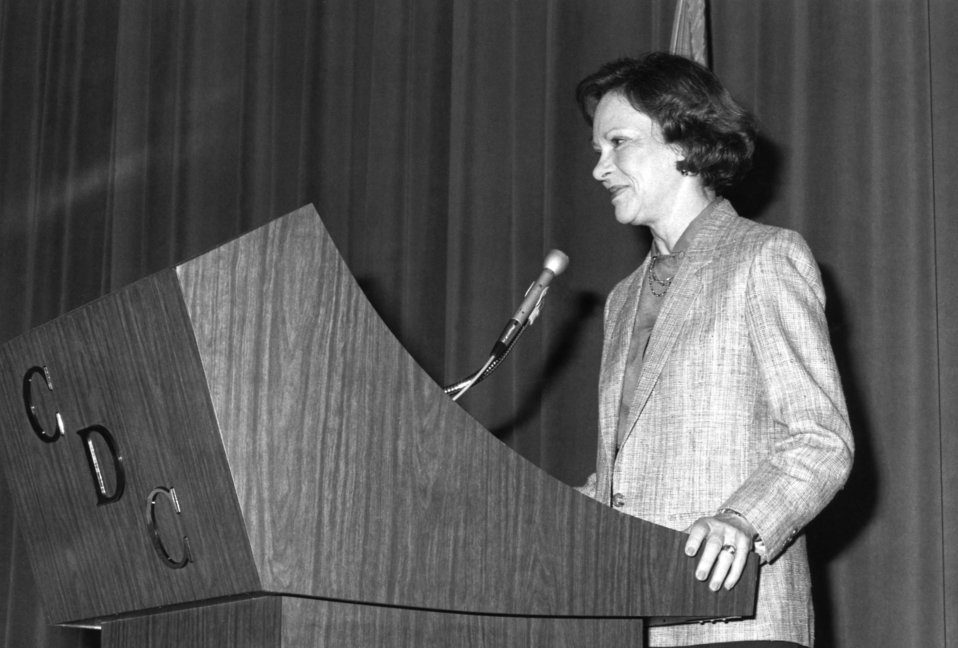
Former First Lady Rosalyn Carter was shown here addressing Centers for Disease Control personnel at a ceremony acknowledging Women's History Week during the early 1990s.